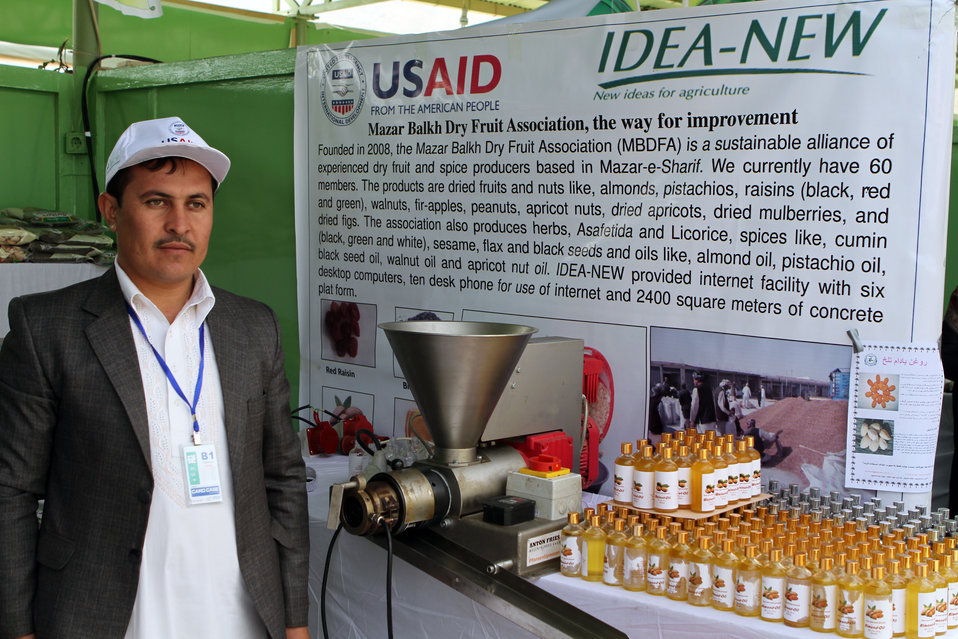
Agfair event